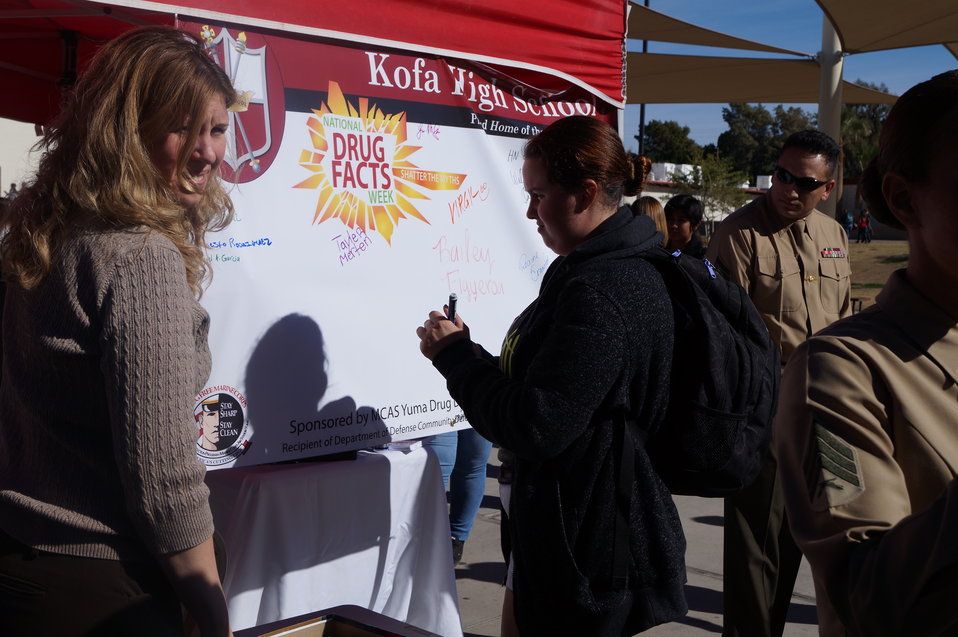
Nationa Drug Facts Week - KOFA HS

he Drug Demand Reduction Program out of Yuma, Arizona held numerous events at local schools to support NIDA's National Drug Facts Week, Jan. 27-Feb. 2 2014. Teens participated in drug awareness games, and helped to Shatter the Myths about teen substance abuse.